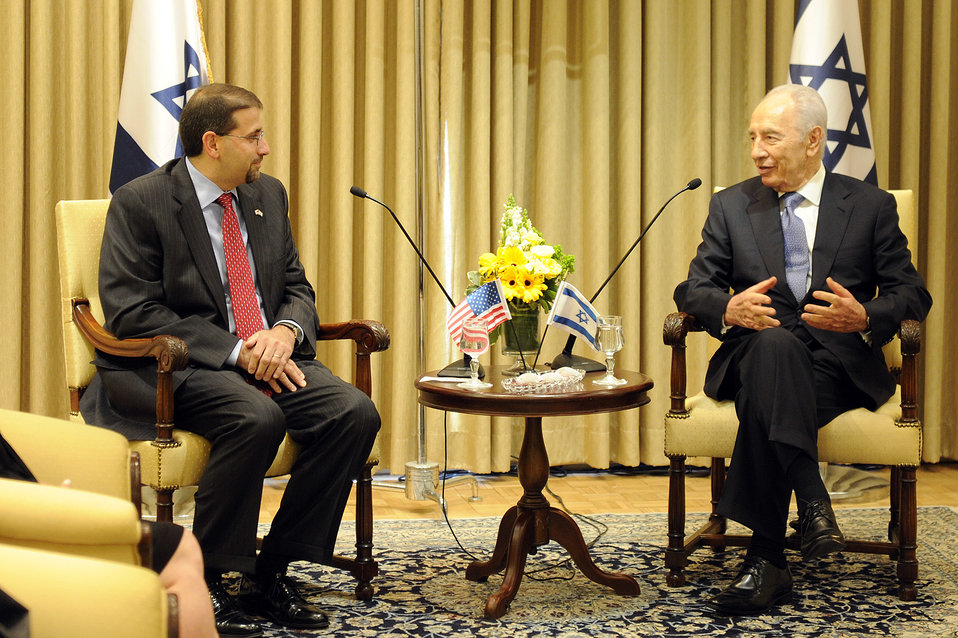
mbassador Shapiro Meets With Israeli President Peres

U.S. Ambassador to Israel Daniel B. Shapiro meets with Israeli President Shimon Peres after presenting his credentials at the President's residence in Jerusalem on August 3, 2011.